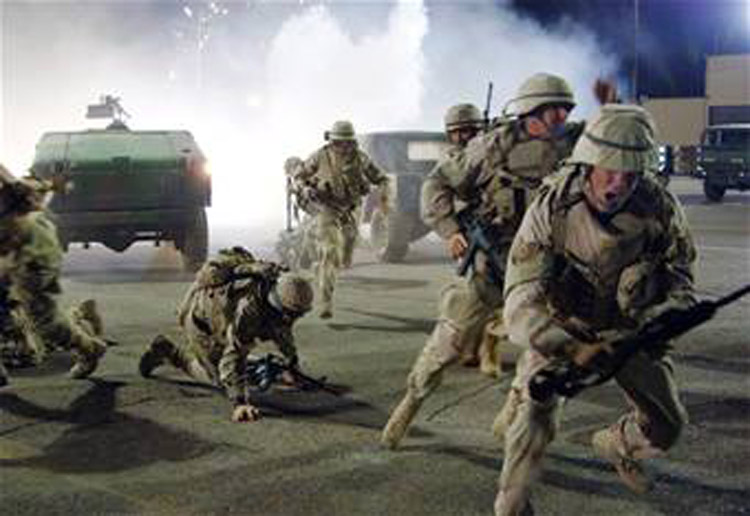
Movie makers team with military for realistic scenes

Airmen filling the roles of extras on the set of the movie